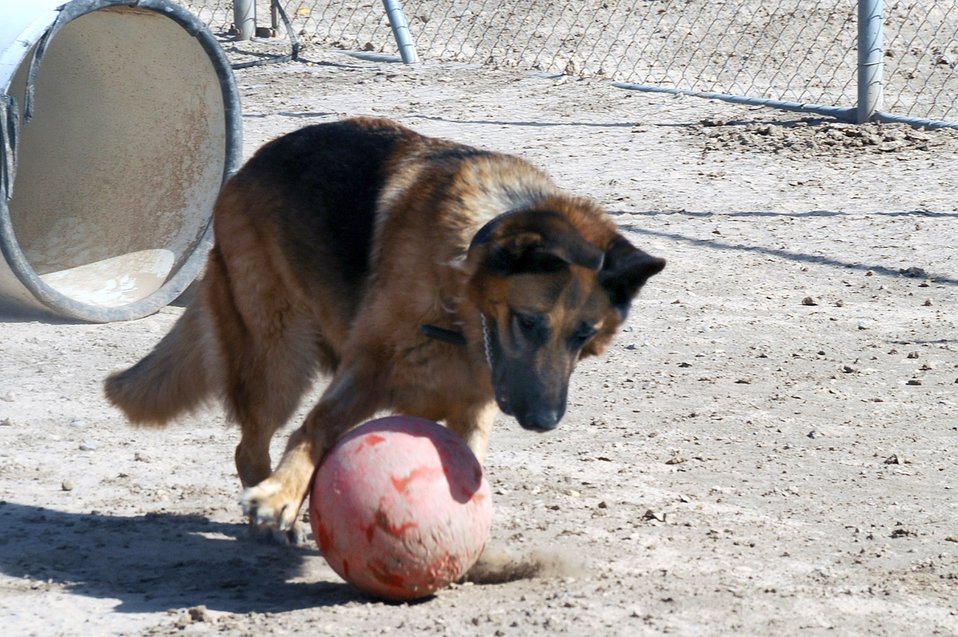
Ali Airmen mourn loss of K-9 team member

Goro plays soccer during some downtime July 7 at Ali Base, Iraq. Goro, a military working dog assigned to the 407th Air Expeditionary Group's Provost Marshal Office here, died July 28 from natural causes.